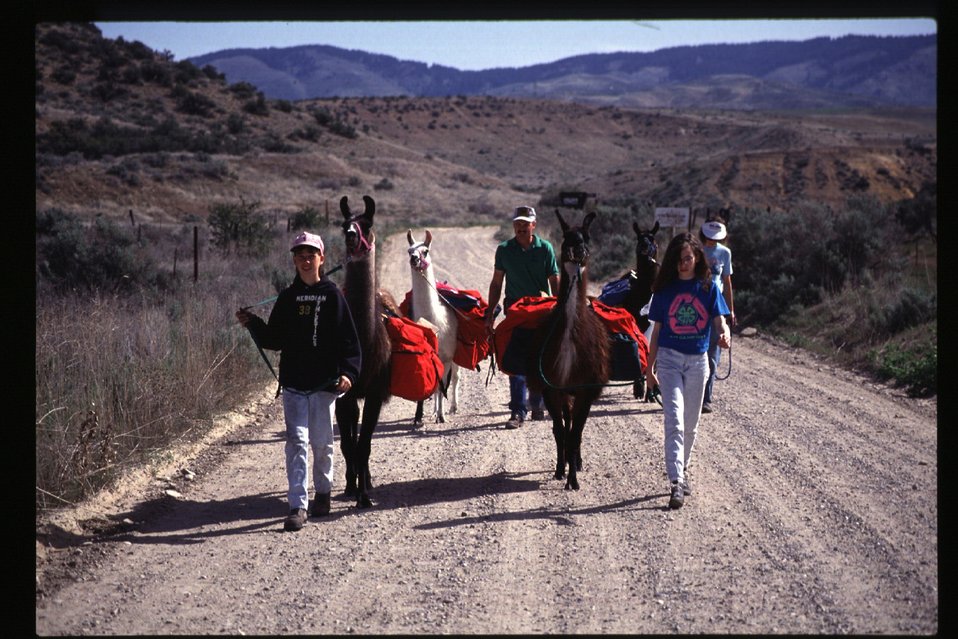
Rangeland and environmental education Boise Front Tending our Foothills Packing in lamas Four Rivers Field Office LSRD Lower Snake River District